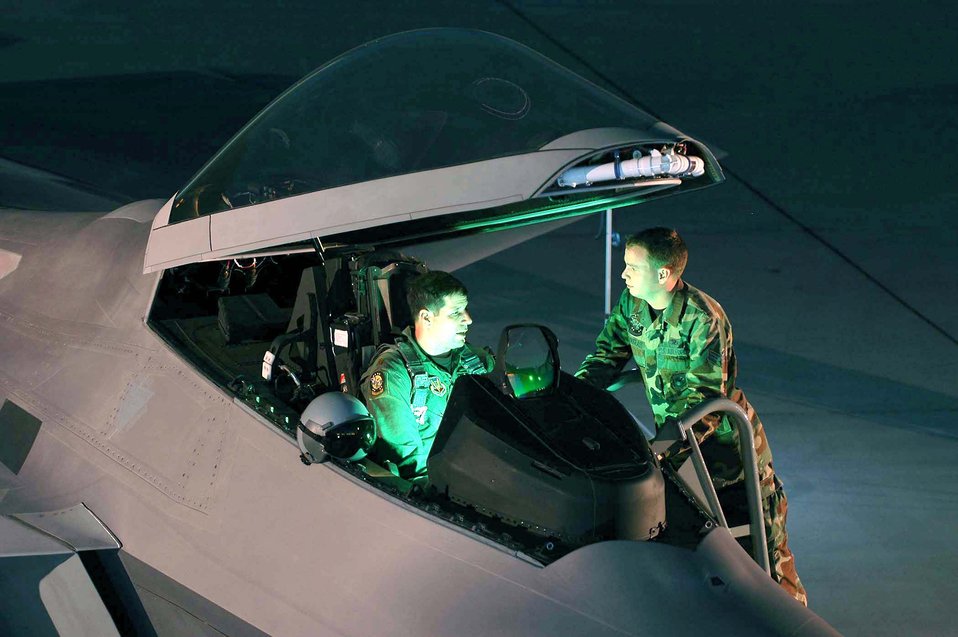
Preflight chat

NELLIS AIR FORCE BASE, Nev. -- Maj. Michael Hernandez, 422nd Test and Evaluation Squadron, an F/A-22 pilot, discusses preflight operations with Senior Airman James Douglass, 422nd TES, F/A-22 crew chief. The F/A-22 is the newest fighter in the Air Force inventory and is currently undergoing test and evaluation here. The new fighter is tentatively scheduled to be operational in late 2005.